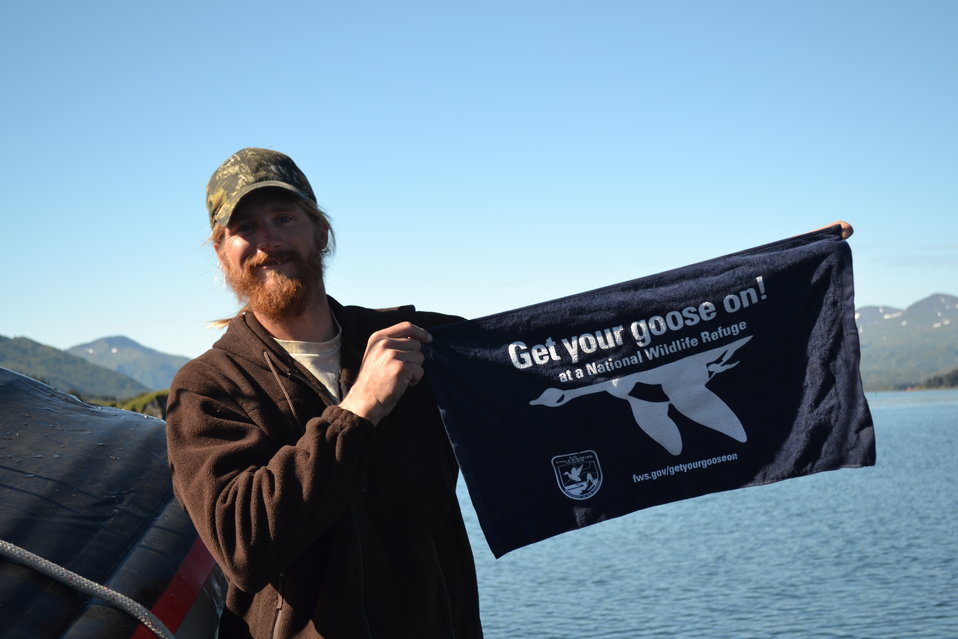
Get Your Goose On! - Alaska Style

USFWS volunteer Wilhelm Wiese on the Refuge Research Vessel Ursa Major II

Credit: Katharine Studholme / USFWS

The Kodiak National Wildlife Refuge is a United States National Wildlife Refuge in the Kodiak Archipelago in southwestern Alaska, United States.

The Kodiak National Wildlife Refuge includes the southwestern two-thirds of Kodiak Island, Uganik Island, the Red Peaks area of Afognak Island and all of Ban Island in the archipelago. It encompasses 1,990,418 acres (8,054.94 km2).[2] The refuge is administered from offices in Kodiak.

The refuge contains seven major rivers and about 100 streams. It is a spawning ground for all six species of Pacific Ocean salmon, trout and several other fish species, as well as a nesting ground for 250 species of bird, many of which feed on salmon. The refuge has only six native species of mammals: Kodiak brown bear, red fox, river otter, ermine, little brown bat and tundra vole. The non-native mammals Sitka deer, mountain goat, Roosevelt elk, snowshoe hare and beaver were introduced to the archipelago between the 1920s and 1950s and are now hunted and trapped.

The climate of the refuge is that of southern Alaska, mild and rainy. Many areas in the refuge are densely forested with Sitka Spruce at lower elevations. There are grasslands in drier areas and at higher elevations. The refuge contains several small glaciers.